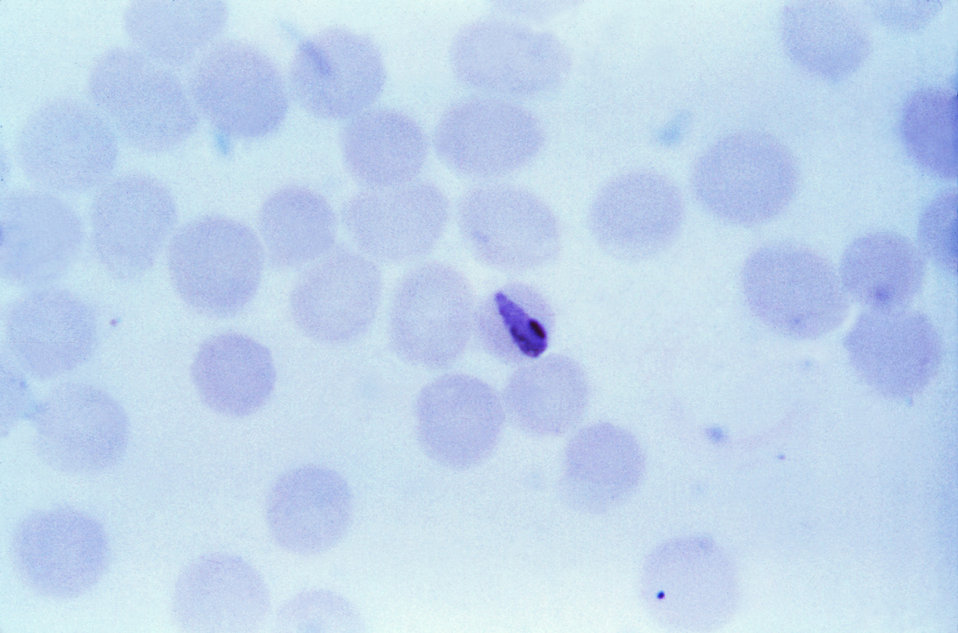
This thin film Giemsa stained micrograph depicts a young, growing Plasmodium malariae 'banded' trophozoite.